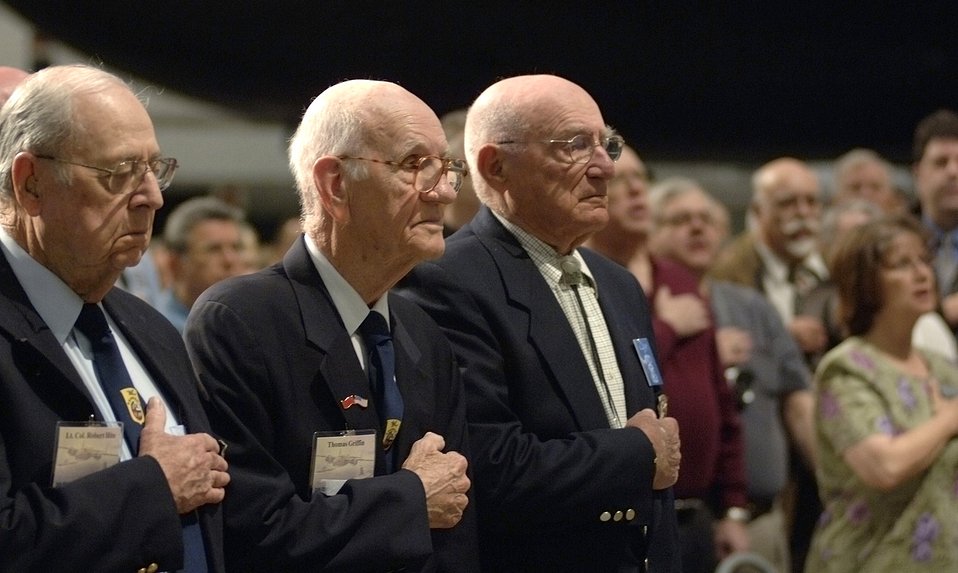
The Doolittle Raider's 64th Reunion

Retired Lt. Col. Robert Hite, Tom Griffin and retired Col. Bill Bower place their hands on their hearts during the posting of the colors which began the Doolittle Raiders official presentation of their 80 silver goblets to the National Museum of the U.S. Air Force. The silver goblets are symbolic gifts from the city of Tucson, Ariz., representing each of the 80 Doolittle Raiders.